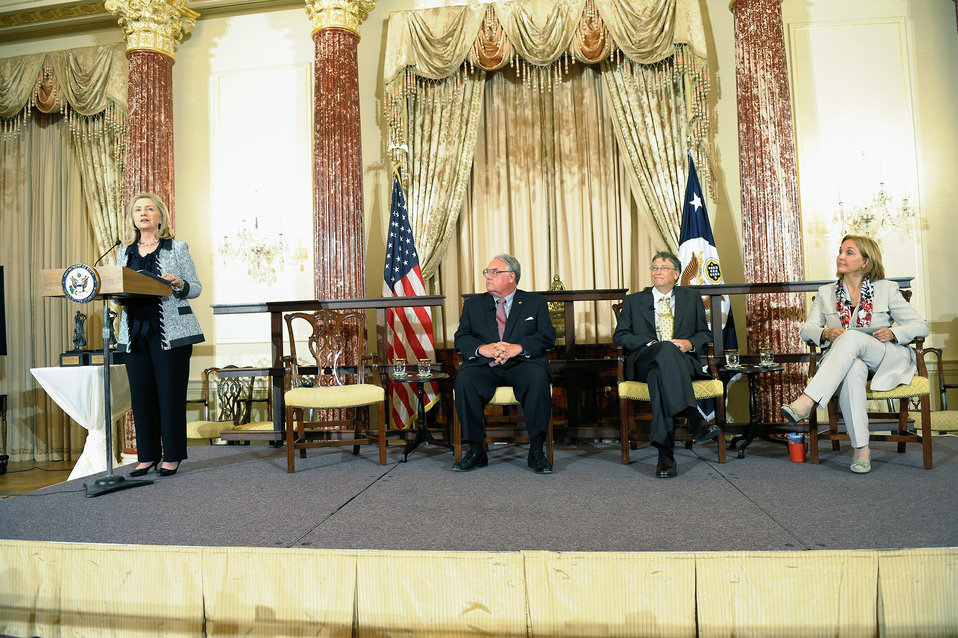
Secretary Clinton Participates in a Conversation With Awardees Howard Buffett, Bill Gates, and WFP Executive Director Josette Sheeran

U.S. Secretary of State Hillary Rodham Clinton presents the World Food Program’s 2011 George McGovern Leadership Award to Howard Buffett, center left; and Bill Gates, center right; as World Food Program Executive Director Josette Sheeran looks on, right; at the U.S. Department of State in Washington, D.C., on October 24, 2011.